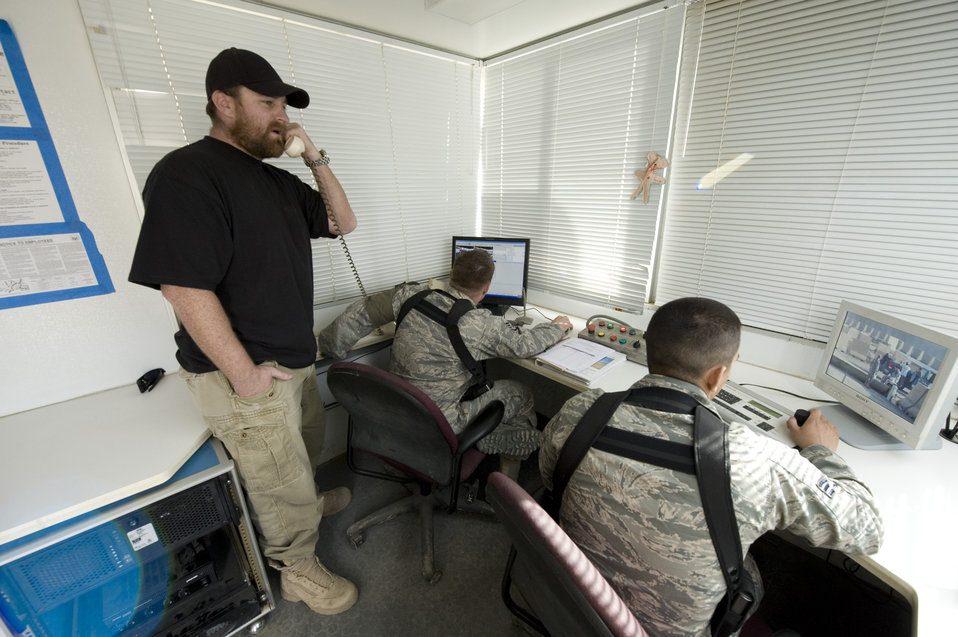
Airmen harness radiation to search vehicles

Ryan May sounds the